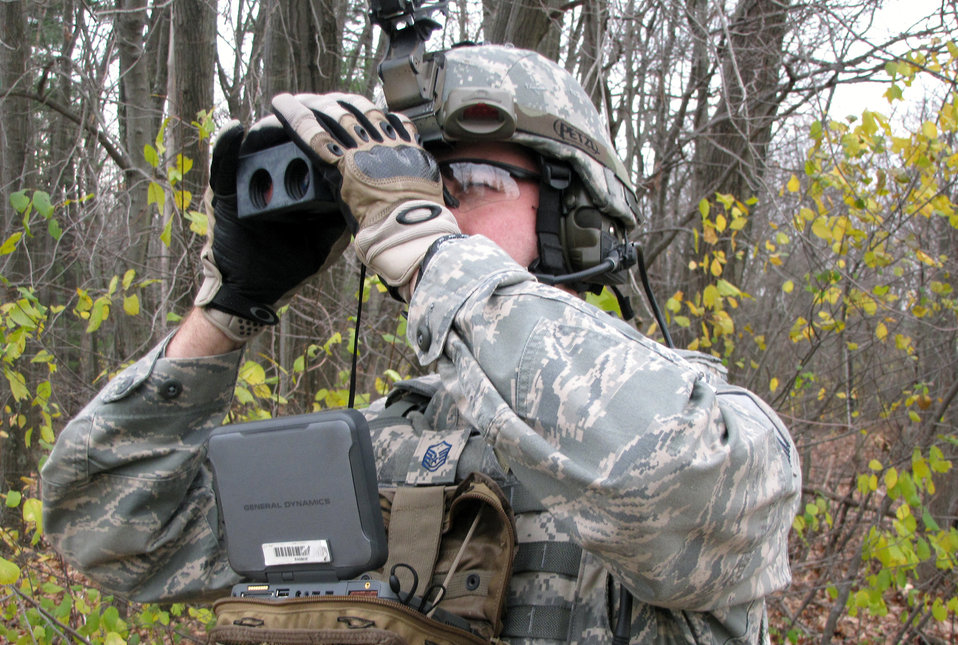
Digital close-air support improvements on the way

Master Sgt. Chris Spann demonstrates use of the Small Wearable Computer equipped with the latest version of the close air support software. Sergeant Spann is a joint tactical air controller assigned to the Tactical Air Control Party-Modernization Office at the Electronic Systems Center.